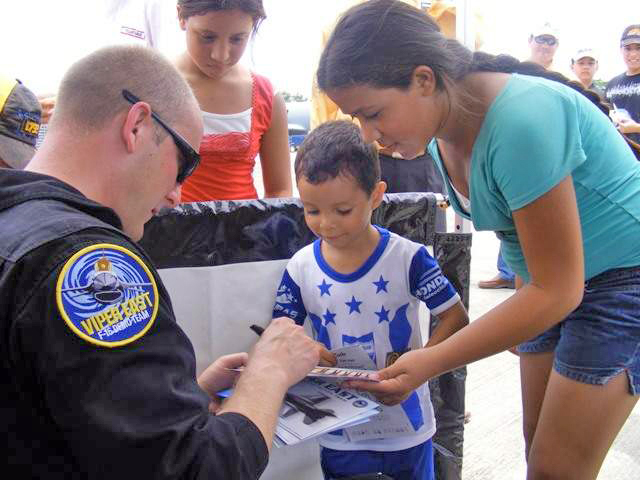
Honduras airshow aids local hospital

Master Sgt. Bryan Spangler signs an autograph for a Honduran boy June 20 at San Pedro Sula, Honduras. More than 30 Airmen participated at the international airshow. The more than $35,000 proceeds from the show will help build a children's intensive care unit at a local hospital. Sergeant Spangler is a Viper East F-16 Demonstration Team team chief.